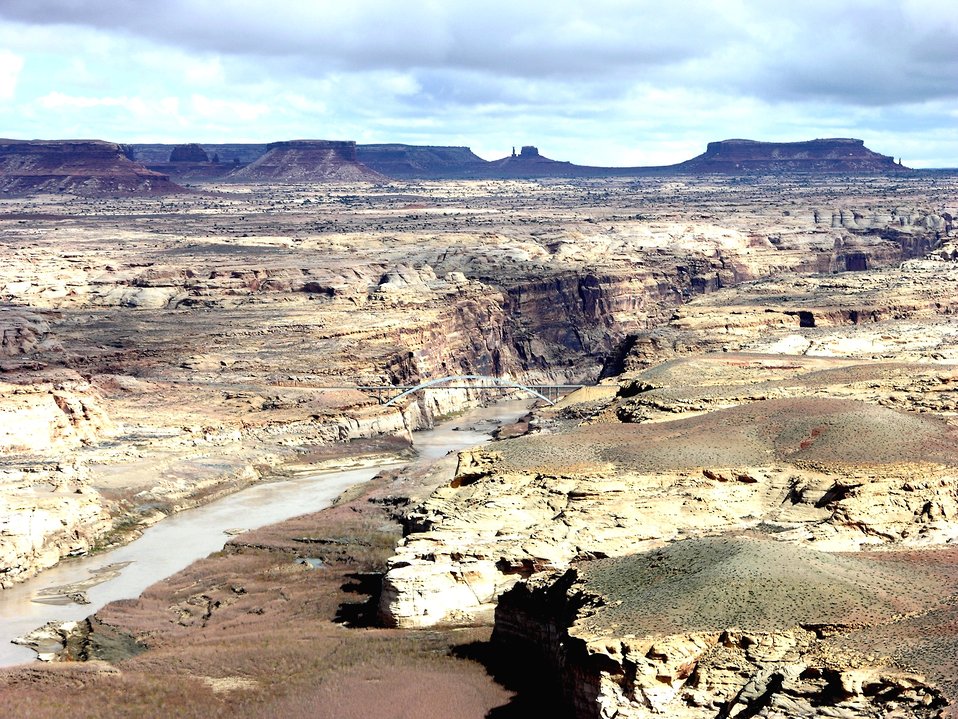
Bridge over the Colorado River